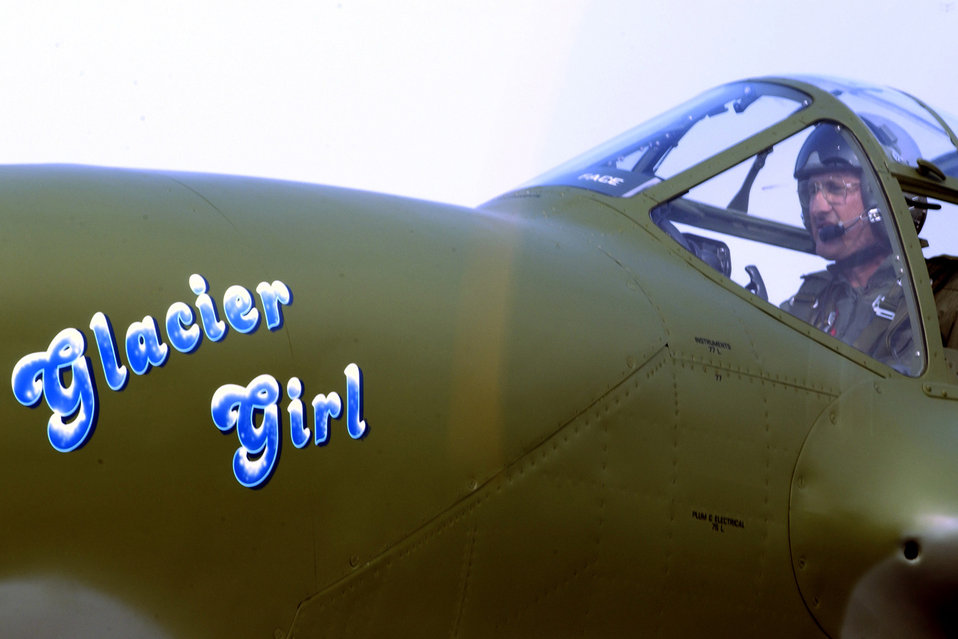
Glacier Girl

LANGLEY AIR FORCE BASE, Va. -- Steve Hinton prepares to taxi out